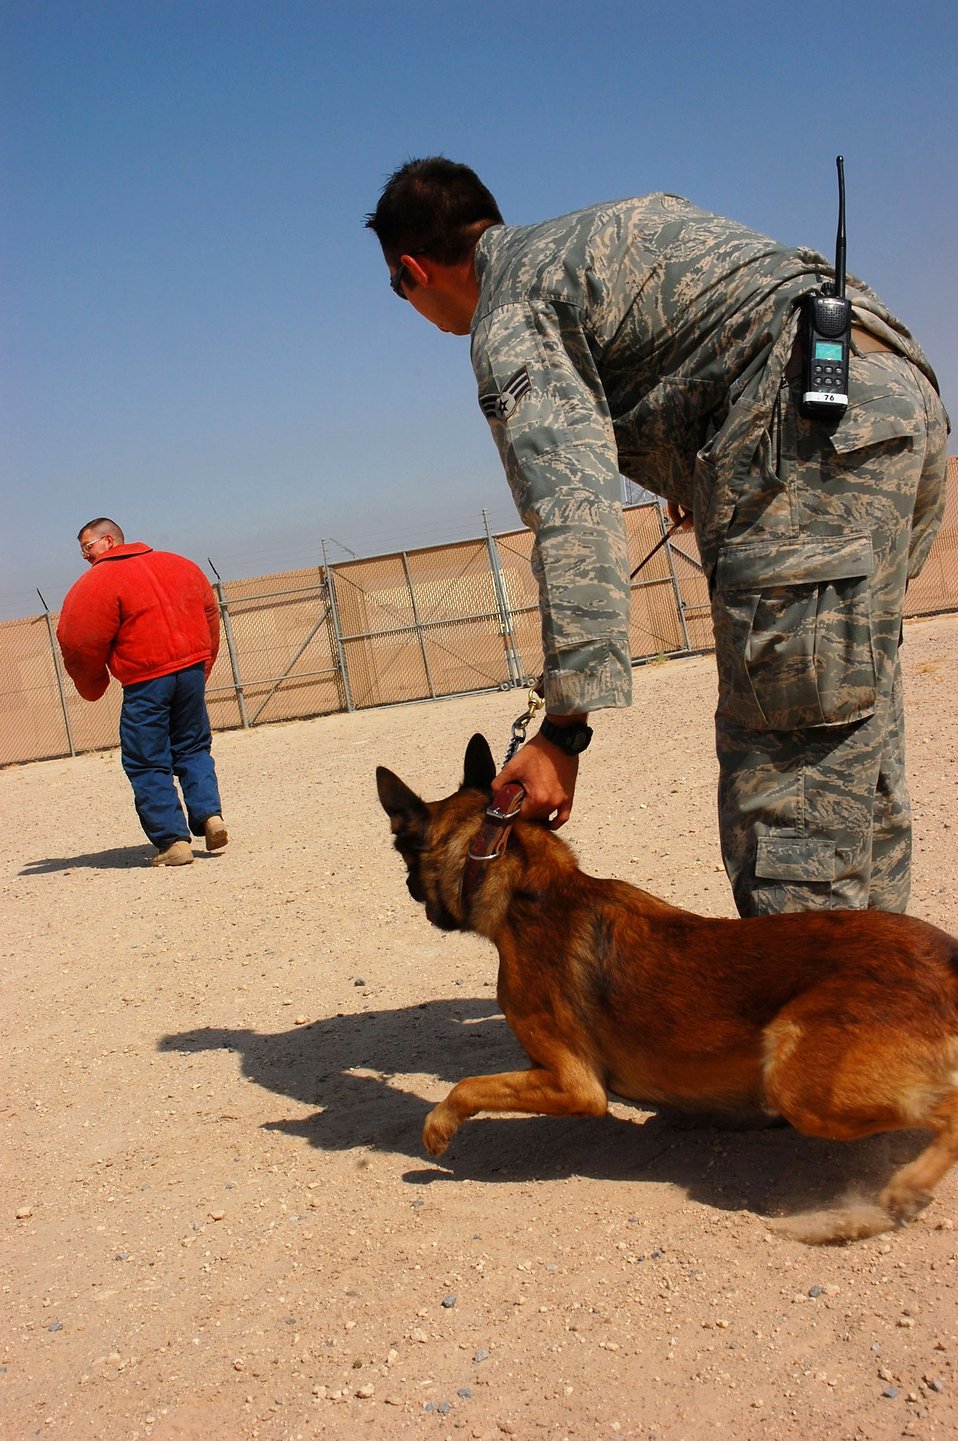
Working like a dog

Senior Airman Justin Gatti prepares to release his partner, Axel, to attack a decoy during aggression training Sept. 19 at a deployed location in Southwest Asia. Airman Gatti is a 386th Expeditionary Security Forces Squadron military working dog handler, and Axel is a 386th ESFS military working dog. The military working dogs are trained several times a week to keep their skills sharp.